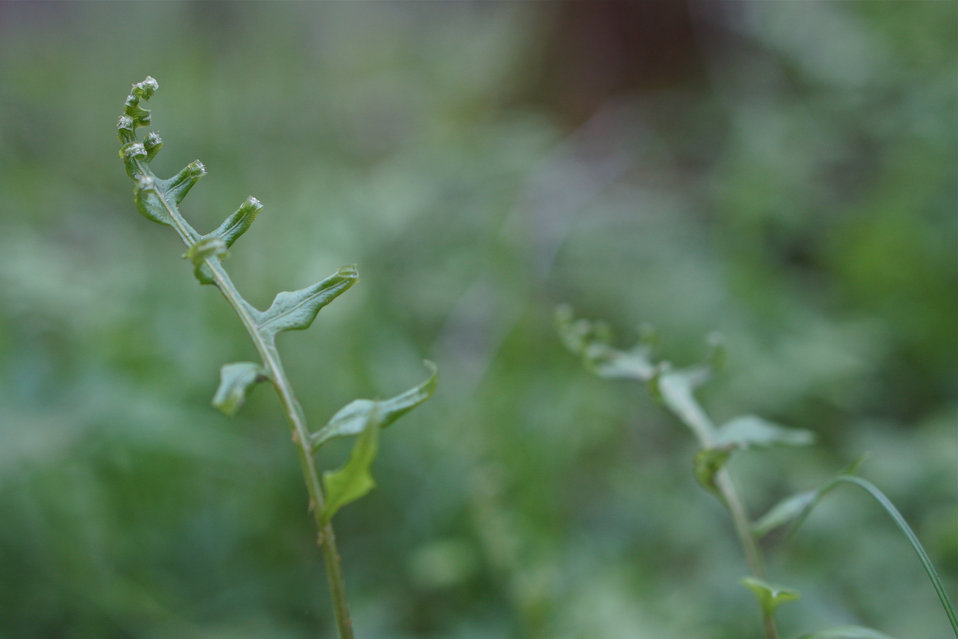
Fern fronds unfolding

In May, bog conservationists from Tennessee, North Carolina, and Georgia convened in the north Georgia mountains for the spring, 2014 meeting of the Bog Learning Network. The event provided an opportunity for biologists to see, first hand, the result of management efforts at two north Georgia bogs. More importantly, the outings provided an opportunity to share innovative approaches to bog management, such as the role of the Georgia Plant Conservation Alliance in conserving rare plants and coordinating a cadre of volunteers to work on bog management.

The Bog Learning Network was convened in the winter of 2013 as a way to bring together people working for bog conservation across the Southern Appalachians. Southern Appalachian bogs are one of North America’s rarest habitats and home to many rare plants and animals.